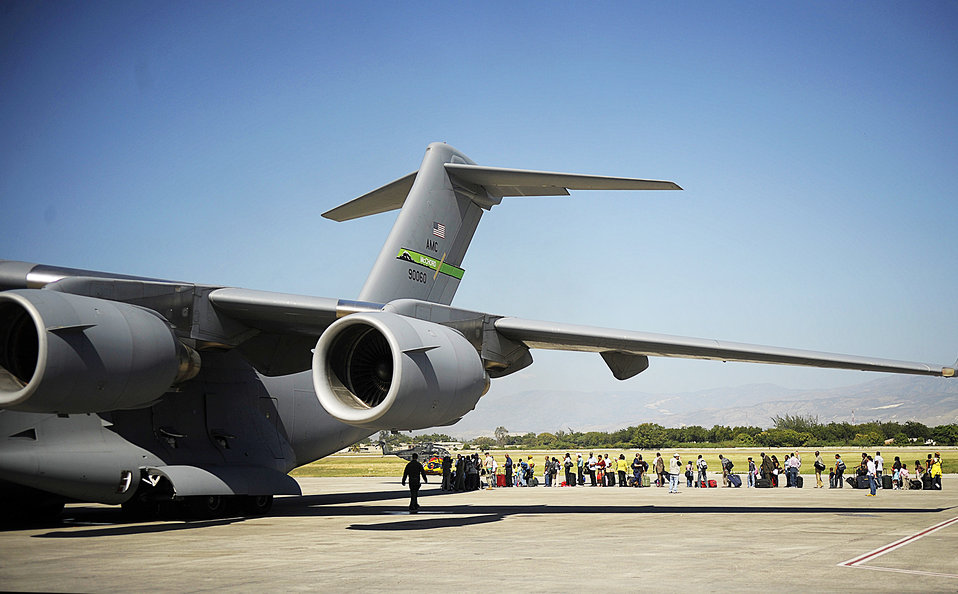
Time to leave

Lining up to board a C-17 Globemaster III, U.S. citizens living in Haiti evacuate from Toussaint L'Ouverture International Airport, in Port-au-Prince, Haiti, Jan. 18, 2010.